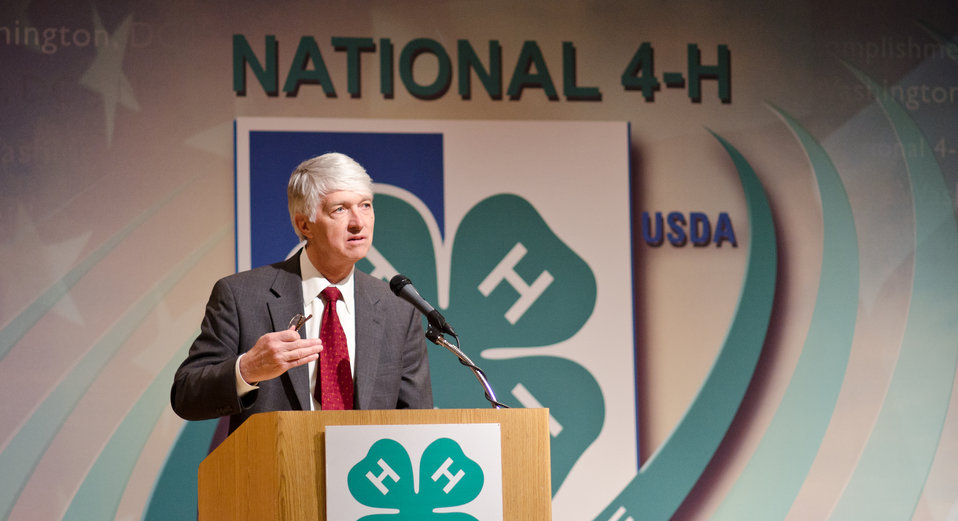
U.S. Department of Agriculture (USDA) National Institute of Food and Agriculture’s Director Dr. Roger Beachy presented this day’s opening remarks to approximately 300 youth from 47 states or territories and Canada at the National 4-H Conference on Tuesday, April 5, 2011, in Washington, DC. The conference is the premier youth development opportunity of the USDA. Aged between 15-19 years old the attendees were selected by various means by their states to represent them at the conference.